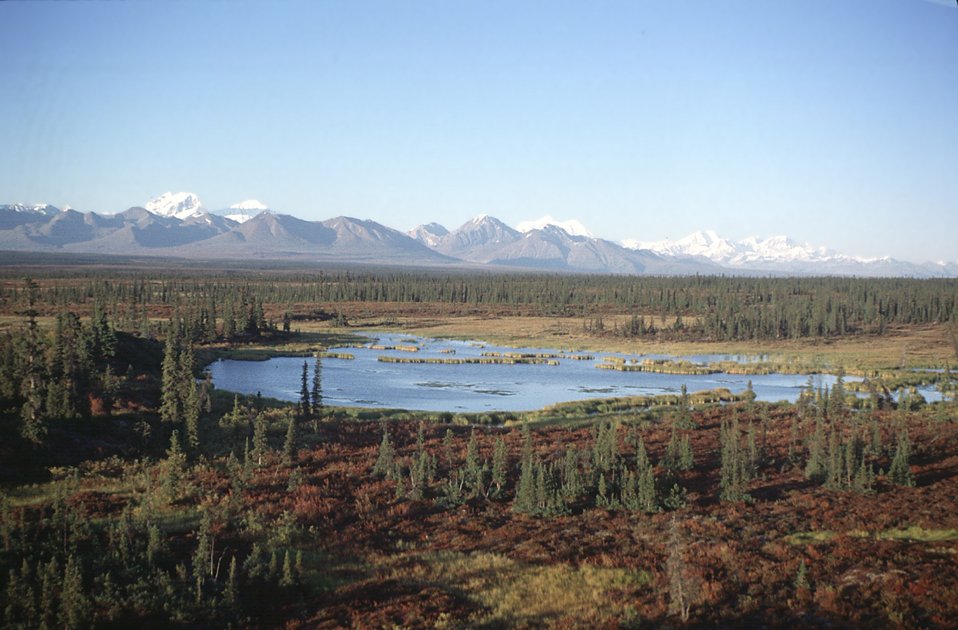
Pond along Denali Highway, Alaska